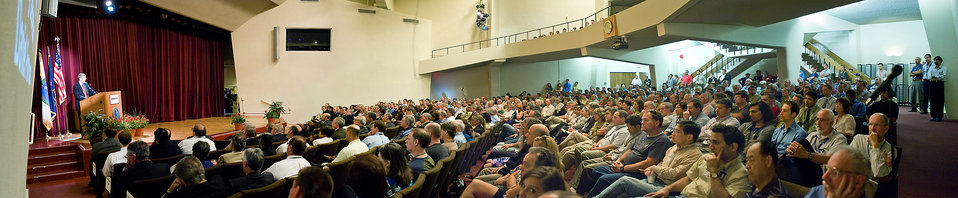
Brookhaven Reactor Visit (All-hands Meeting)

On June 1, Doug Pocze and John Malleck of the U.S. Environmental Protection Agency visited Brookhaven Lab to join the celebration marking a major milestone in decommissioning of the BGRR—the safe and successful removal of the graphite pile. This phase, which removed 60,000 activated graphite blocks weighing a total of 700 tons, began in early February and was completed in May. It represents the most difficult part of the decommissioning process.

DOE Deputy Secretary Daniel Poneman and DOE Environmental Management Recovery Act Program Director Cynthia Anderson also were present for the celebration. The visitors toured the BGRR to see the remotely operated equipment and controls used for graphite removal.